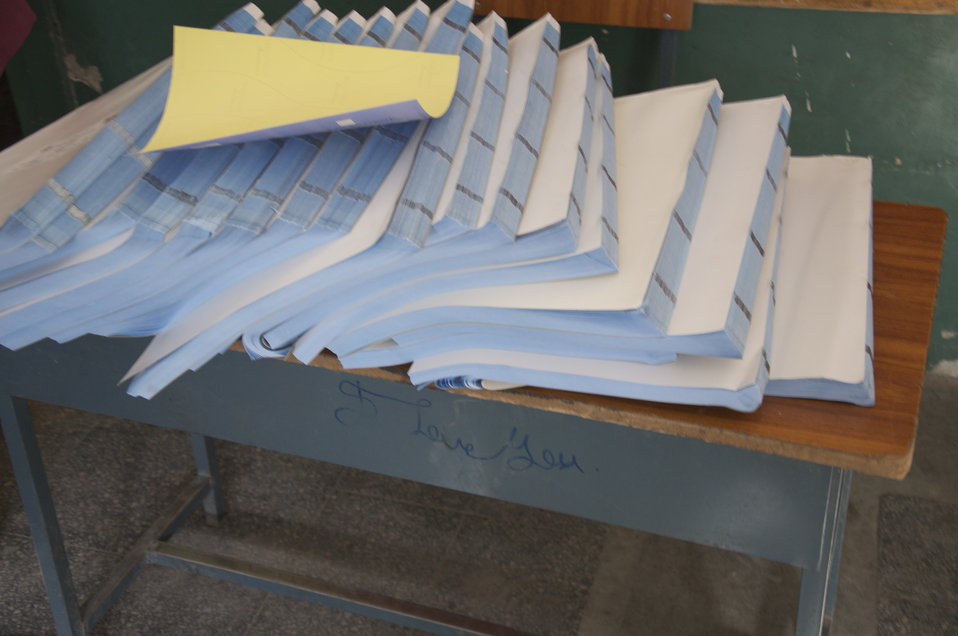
Ballots